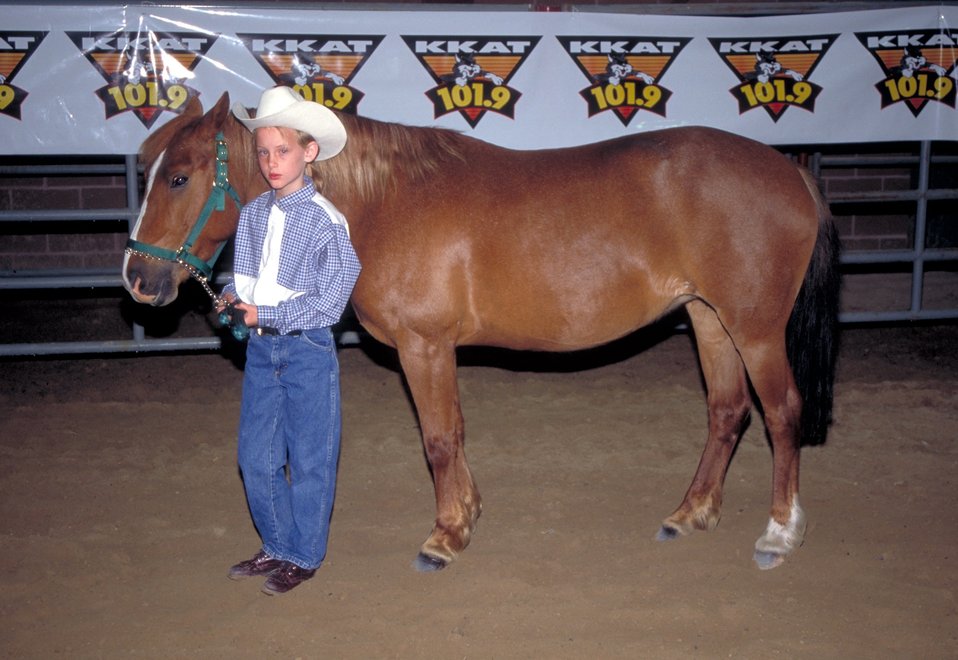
Utah Annual Wild Horse Festival.